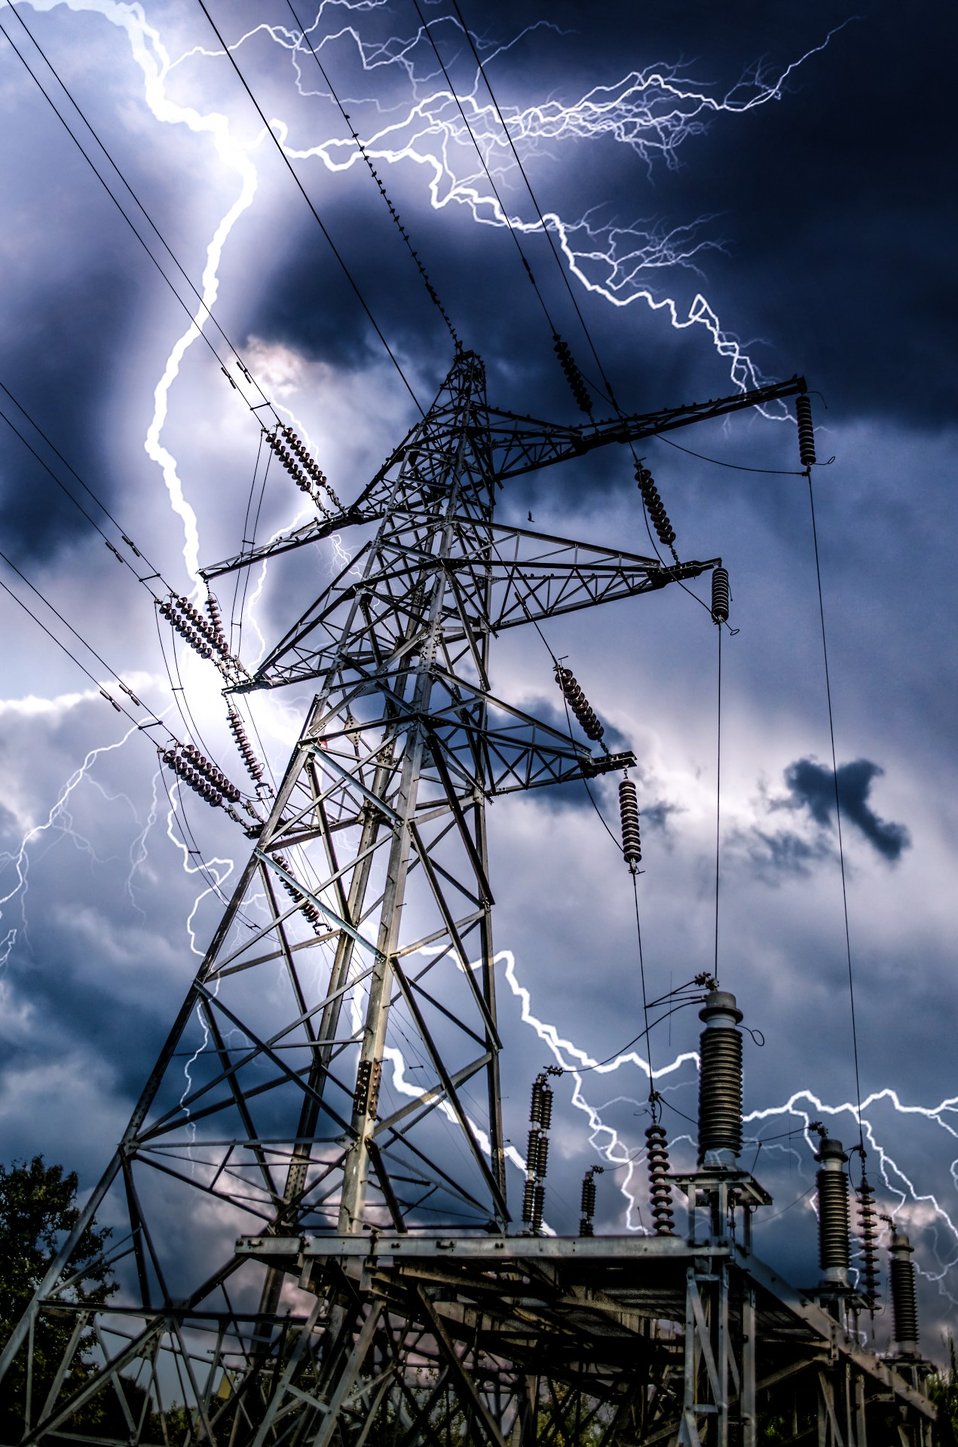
High voltage and storm.